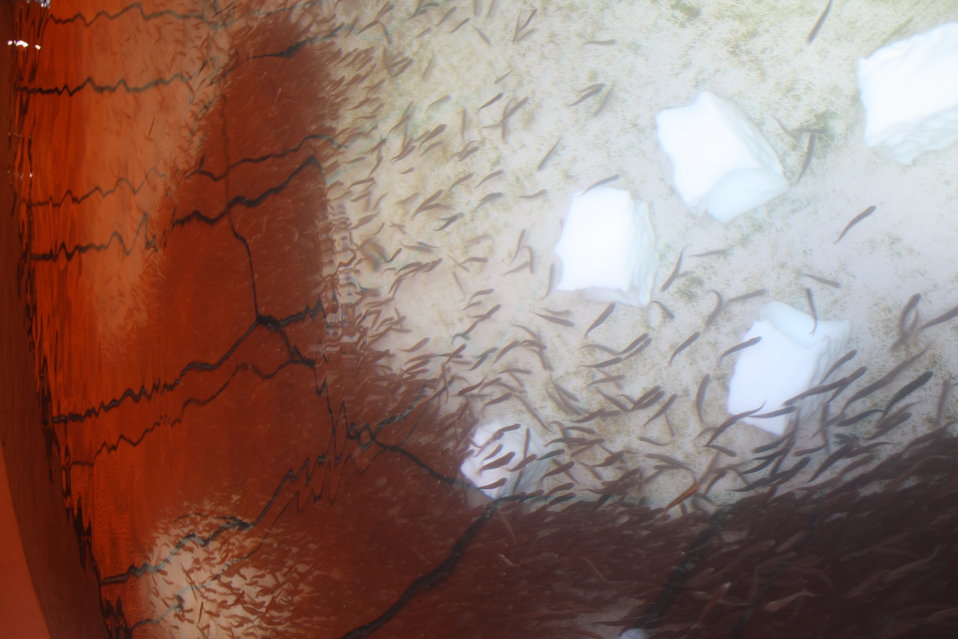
Lake trout in circular fish rearing pool

After flood waters from Hurricane Irene receded, biologists add salt blocks to circular fish rearing pools to assist fish (lake trout) in healing and clearing sediment from their gills.